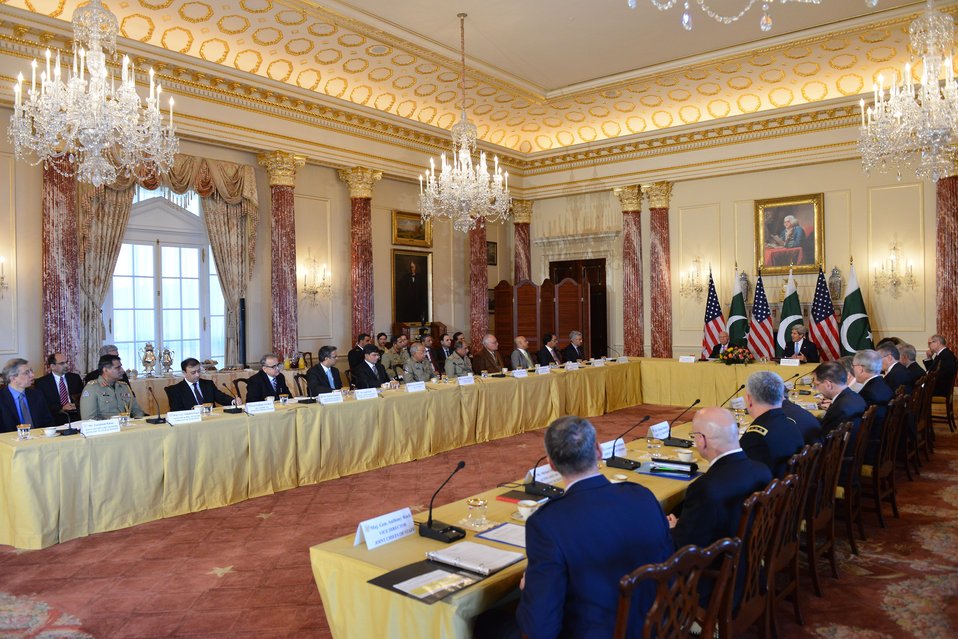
Secretary Kerry and Pakistani National Security and Foreign Affairs Advisor Aziz Participate in the U.S.-Pakistan Strategic Dialogue Plenary Session

U.S. Secretary of State John Kerry and Pakistani National Security and Foreign Affairs Advisor Sartaj Aziz participate in the U.S.-Pakistan Strategic Dialogue Plenary Session at the U.S. Department of State in Washington, D.C., on January 27, 2014.